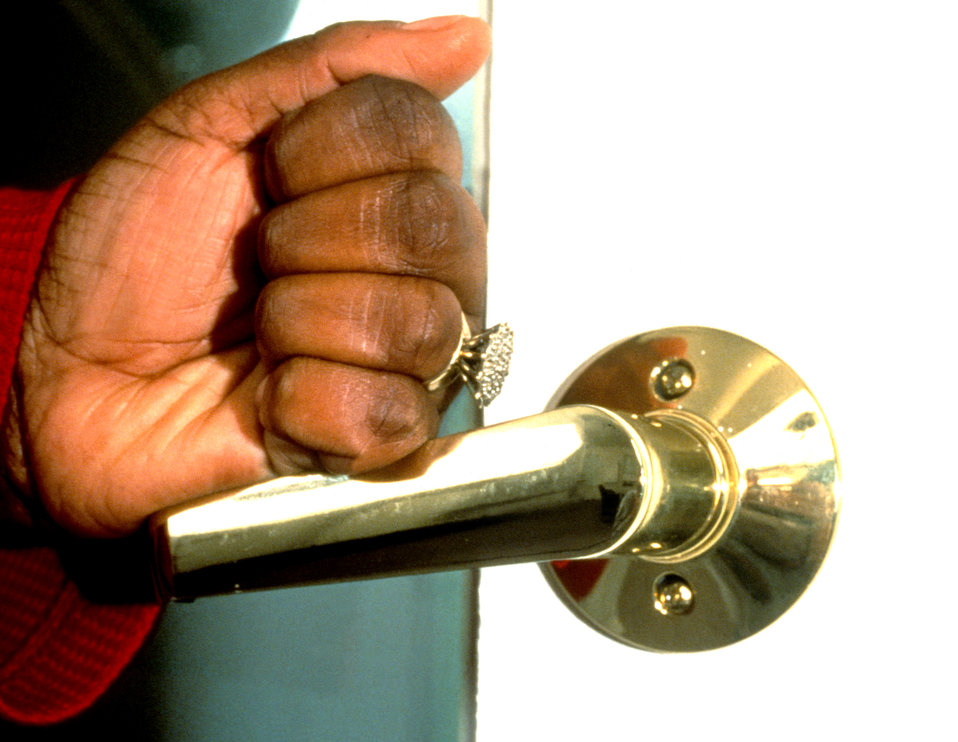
This 1997 image was one of two (see PHIL# 9213) depicting a close-up view of a brass finished, levered door handle being opened here by a clenched hand, and an opened hand's fingertips in PHIL# 9213. These photographs showed two of the ways lever handles can be useful, without requiring strong hand gripping, or the ability to grasp tightly, as would be the case with a round knob, or when hands are full of packages. By designing this simple door handle to accommodate those with mobility impairments, the overall design became even more accommodating to all, which is really the challenge, and the goal of a universally designed facility.